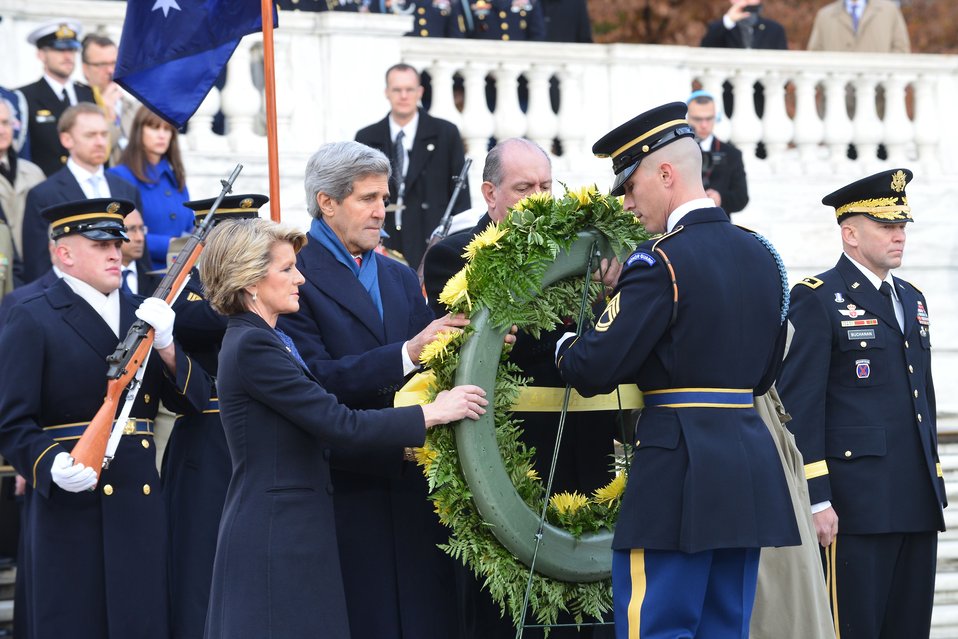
Secretaries Kerry, Hagel and Australian Ministers Bishop, Johnston Participate in a Wreath Laying Ceremony

U.S. Secretary of State John Kerry, U.S. Secretary of Defense Chuck Hagel, Australian Foreign Minister Julie Bishop, and Australian Defence Minister David Johnston participate in a wreath laying ceremony at the Tomb of Unknown Soldier at Arlington National Cemetery in Arlington, Virginia, on November 20, 2013.